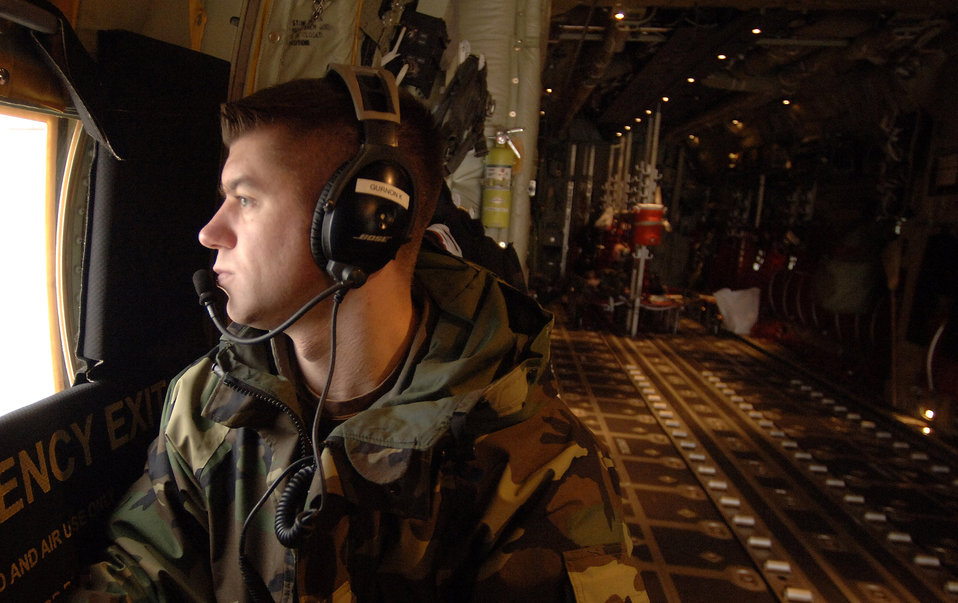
Total force provides seamless airlift support

Tech. Sgt. Kyle Gurnon takes a seat next to the rear cargo door of a C-130 Hercules while taxiing for departure Jan. 9 at Ramstein Air Base, Germany, January, 9. Sergeant Gurnon is a Rhode Island Air National Guard loadmaster with the 143rd Airlift Wing at Quanset State Airport.